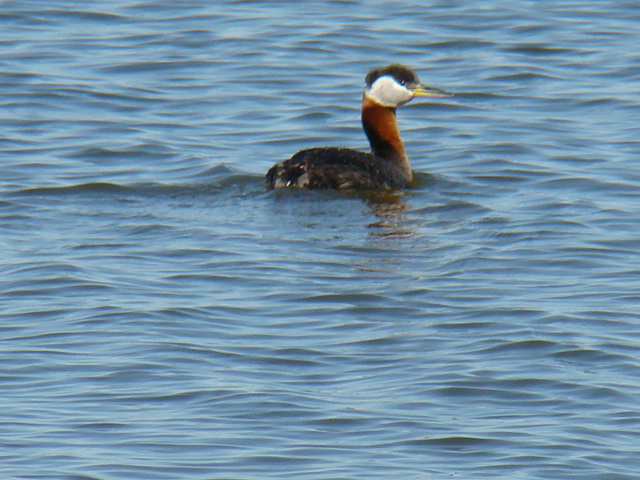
Red-necked Grebe

The lands of the refuge were established to protect and provide habitat for migratory birds that cross State lines and international borders and are by law a Federal trust responsibility.
The refuge is of great value to waterfowl and shorebirds, as well as other migrating water-dependent bird species, because of the diversity of wetland and upland habitats that provide for the diverse life cycle needs of these species.